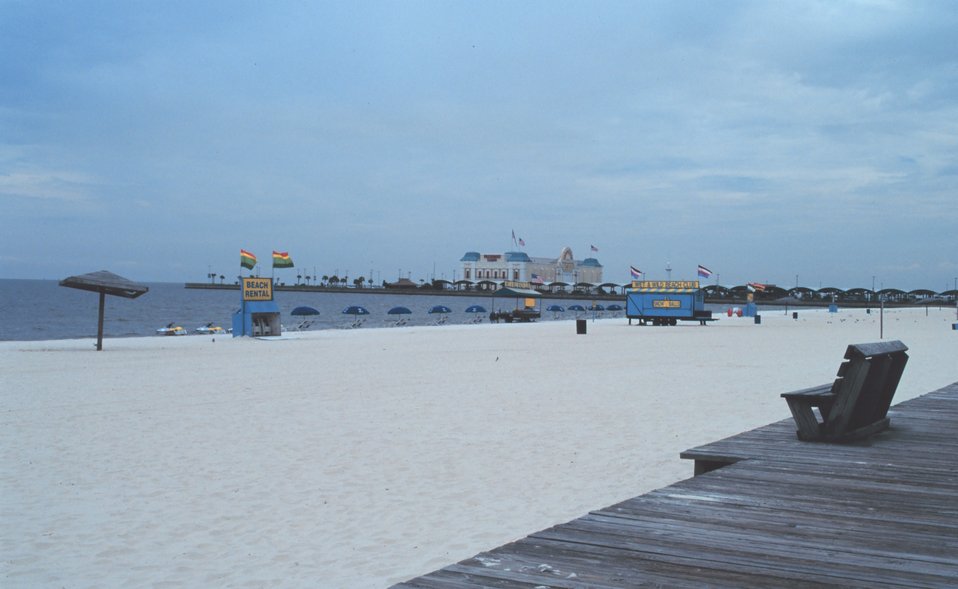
Gambling casinos have been built along the beach at Biloxi